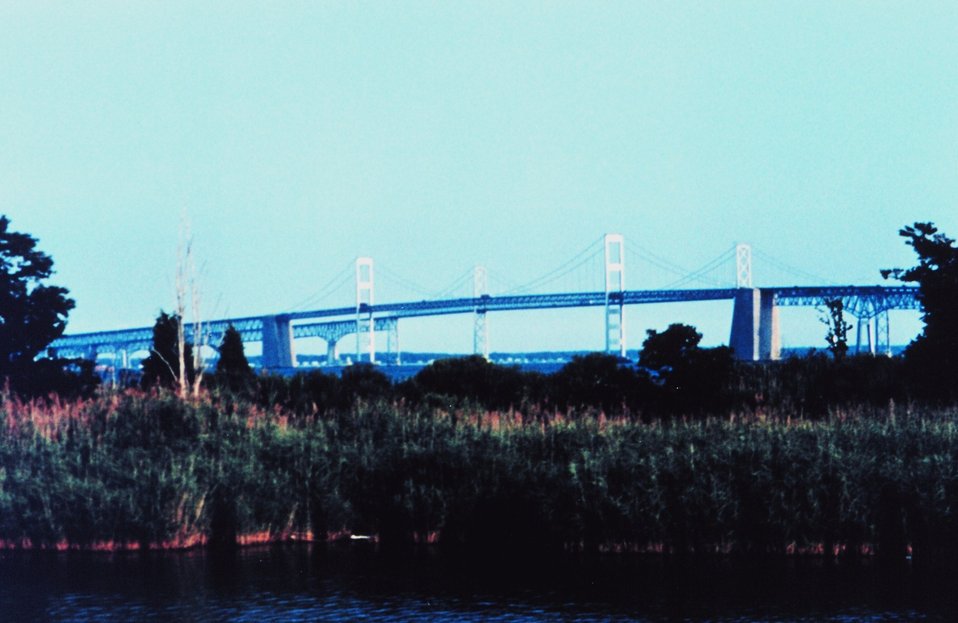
The Chesapeake Bay Bridge as seen from behind Sandy Point State Park.